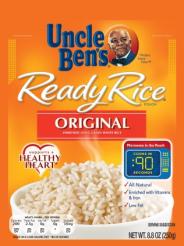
RECALLED – Long Grain White Rice product

February 28, 2014 – Product Recall – Mars Food North America Voluntarily Recalls Specific Batch and Item Number Representing Less Than 3,500 Cases
--No Other UNCLE BEN’S® Products Affected-- For additional information, please refer to the company issued press release available on FDA’s web site at www.fda.gov/Safety/Recalls/ucm387764.htm